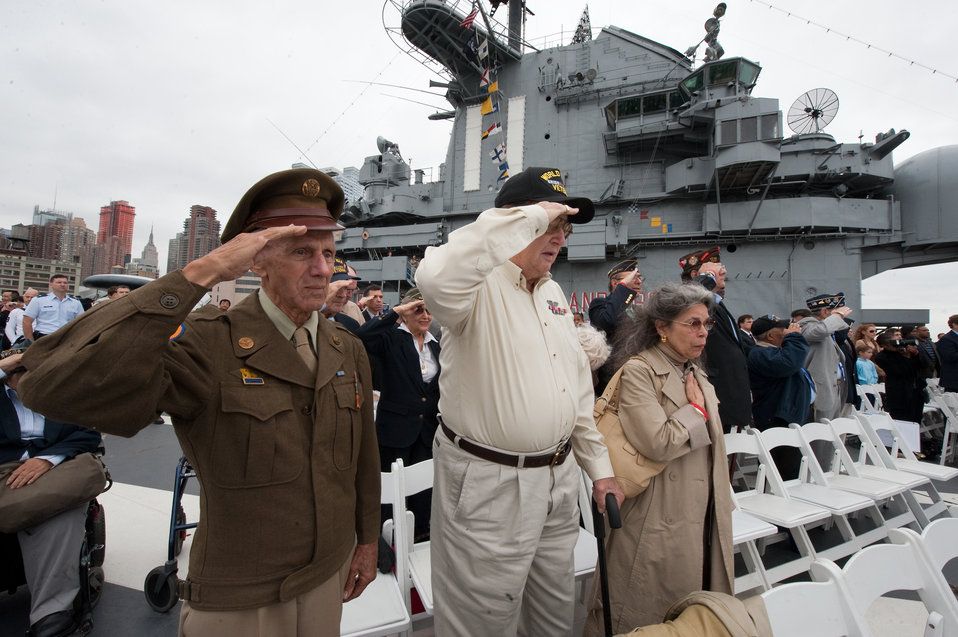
Air Force Week New York City Proclamation Ceremony

Frank Milano salutes during playing of the national anthem for the Air Force Week New York City proclamation ceremony at the USS Intrepid on Aug. 24, 2010. Mr. Milano of New York City, was a Corporal in the Army Air Force, stationed in Europe with the 9th Air Force during World War II. The event at the Intrepid Sea, Air & Space Museum was highlighted by a six-ship flyover by the USAF Thunderbirds. The Honorable Michael Donley, Secretary of the Air Force attended, along with General Raymond Johns, Commander of Air Mobility Command. The Police Commissioner of the City of New York, the Honorable Raymond Kelly, represented NYC. Mr. Greg Kelly of